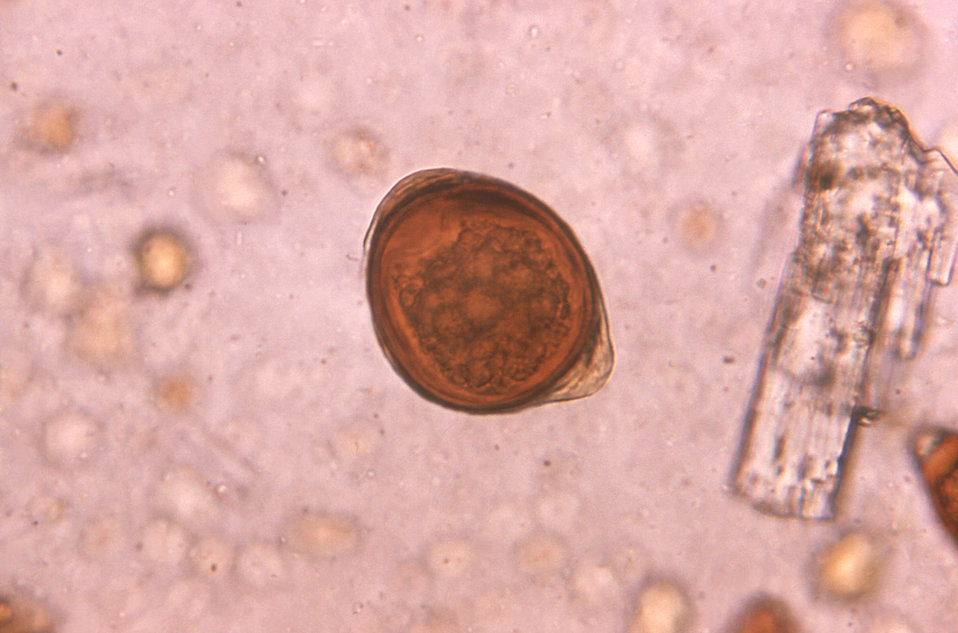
Under a high magnification, this micrograph depicts an morphologically-atypical egg from the 'human whipworm', Trichuris trichiura, the causal agent of Trichuriasis. For a view depicting the usual shape of a T. trichiura egg, see PHIL 652 or 14779.